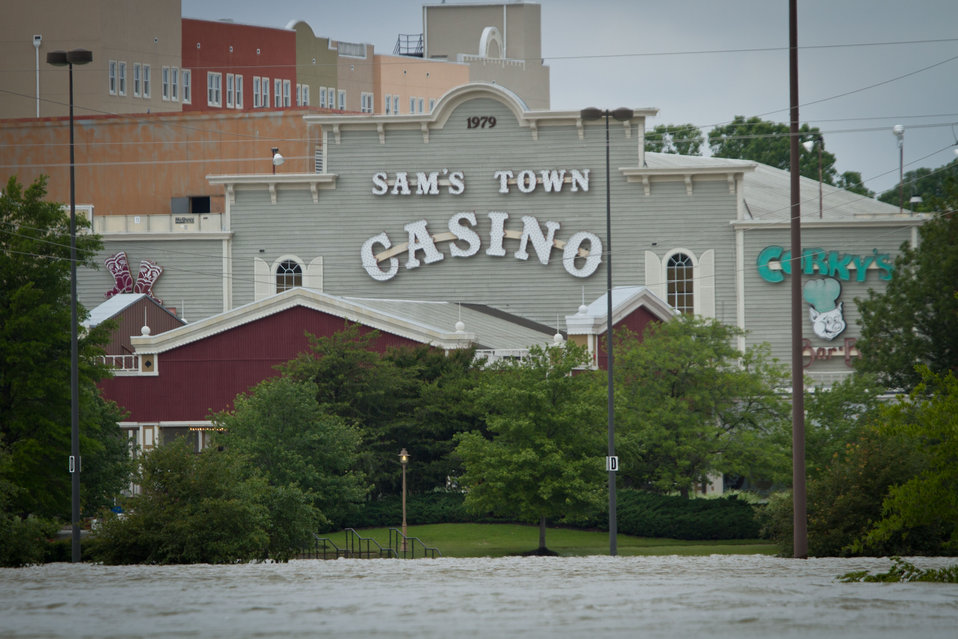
Floods waters from Mississippi River inundated casinos and farms that surround Tunica, MS, on Sunday, May 15. 2011.